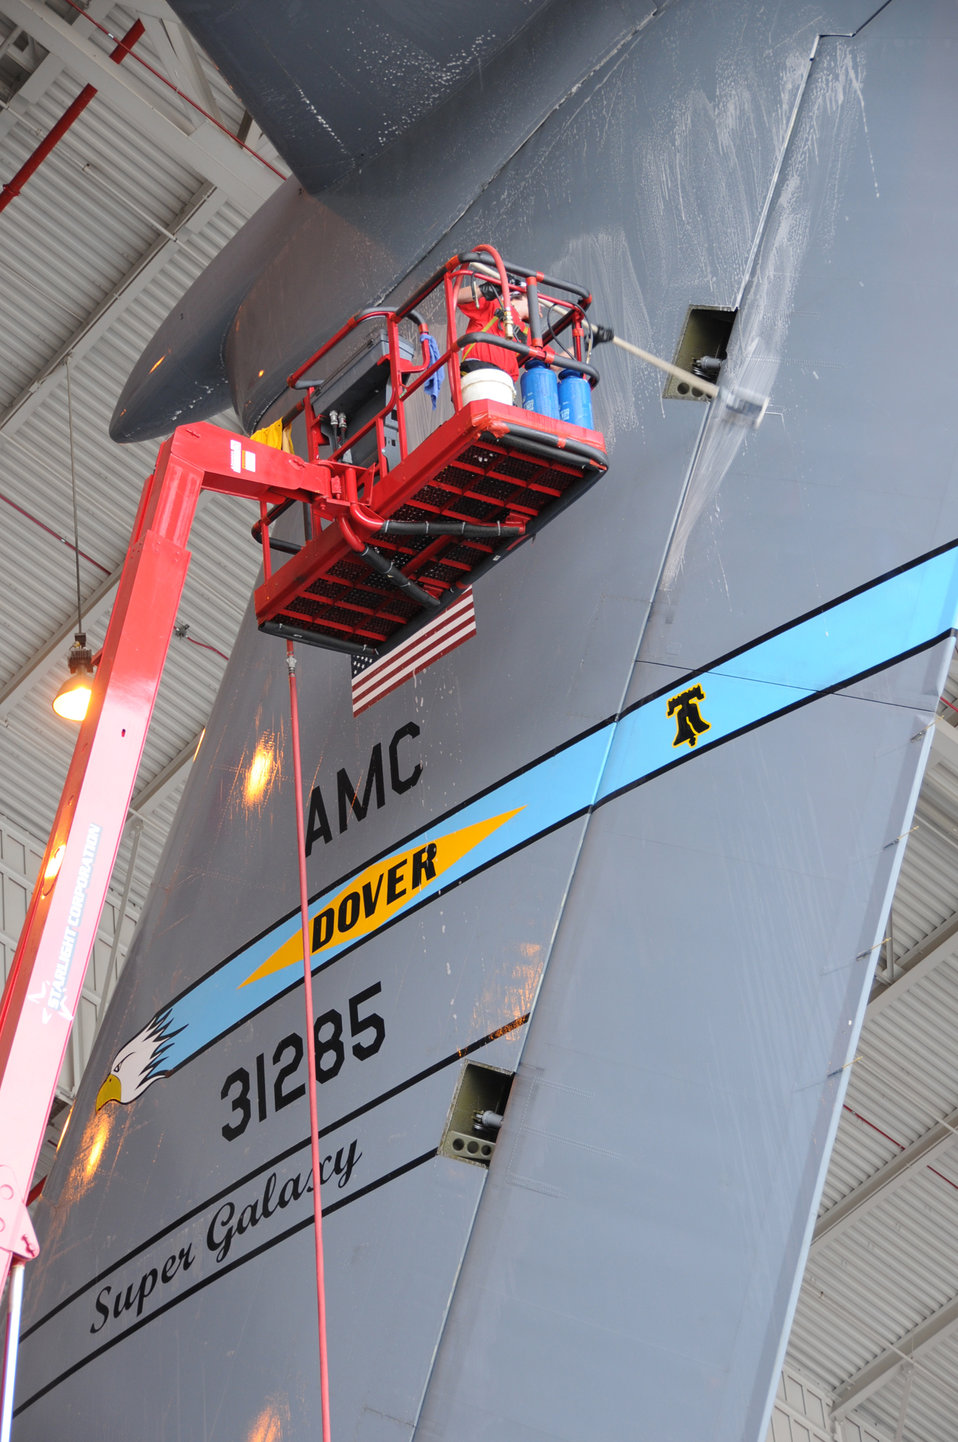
A long way to go

A contractor washes a C-5M Galaxy during the initial phase of reconditioning program at the New York Air National Guard's 105th Aiflift Wing at Stewart Air National Guard Base.